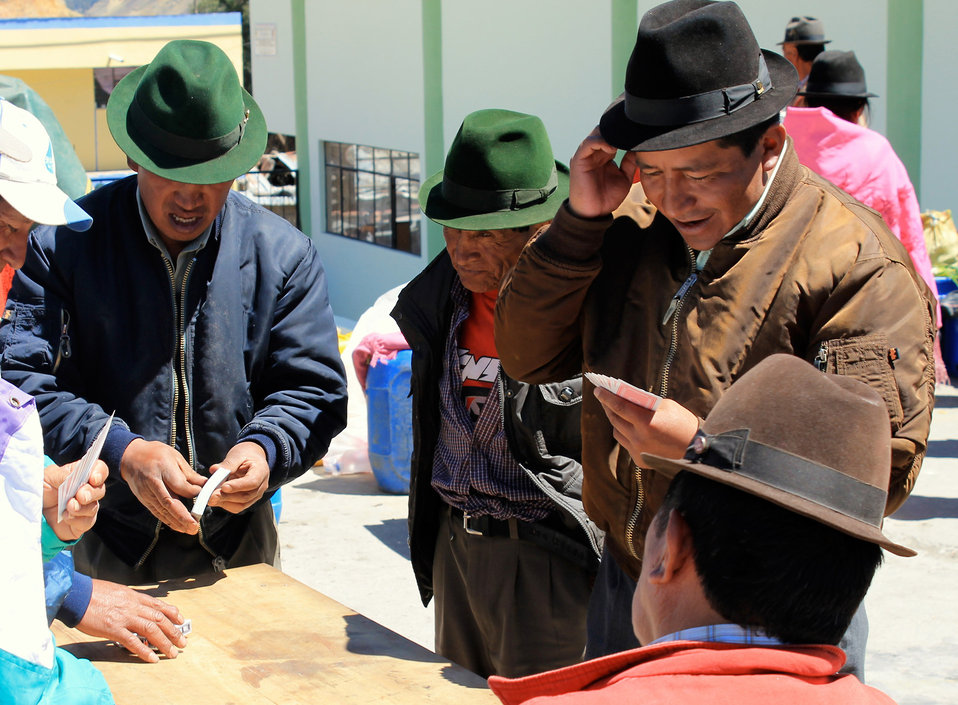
Card players, craft market, ecuador

Men playing cards at zumbahua market in cotopaxi, ecuador.